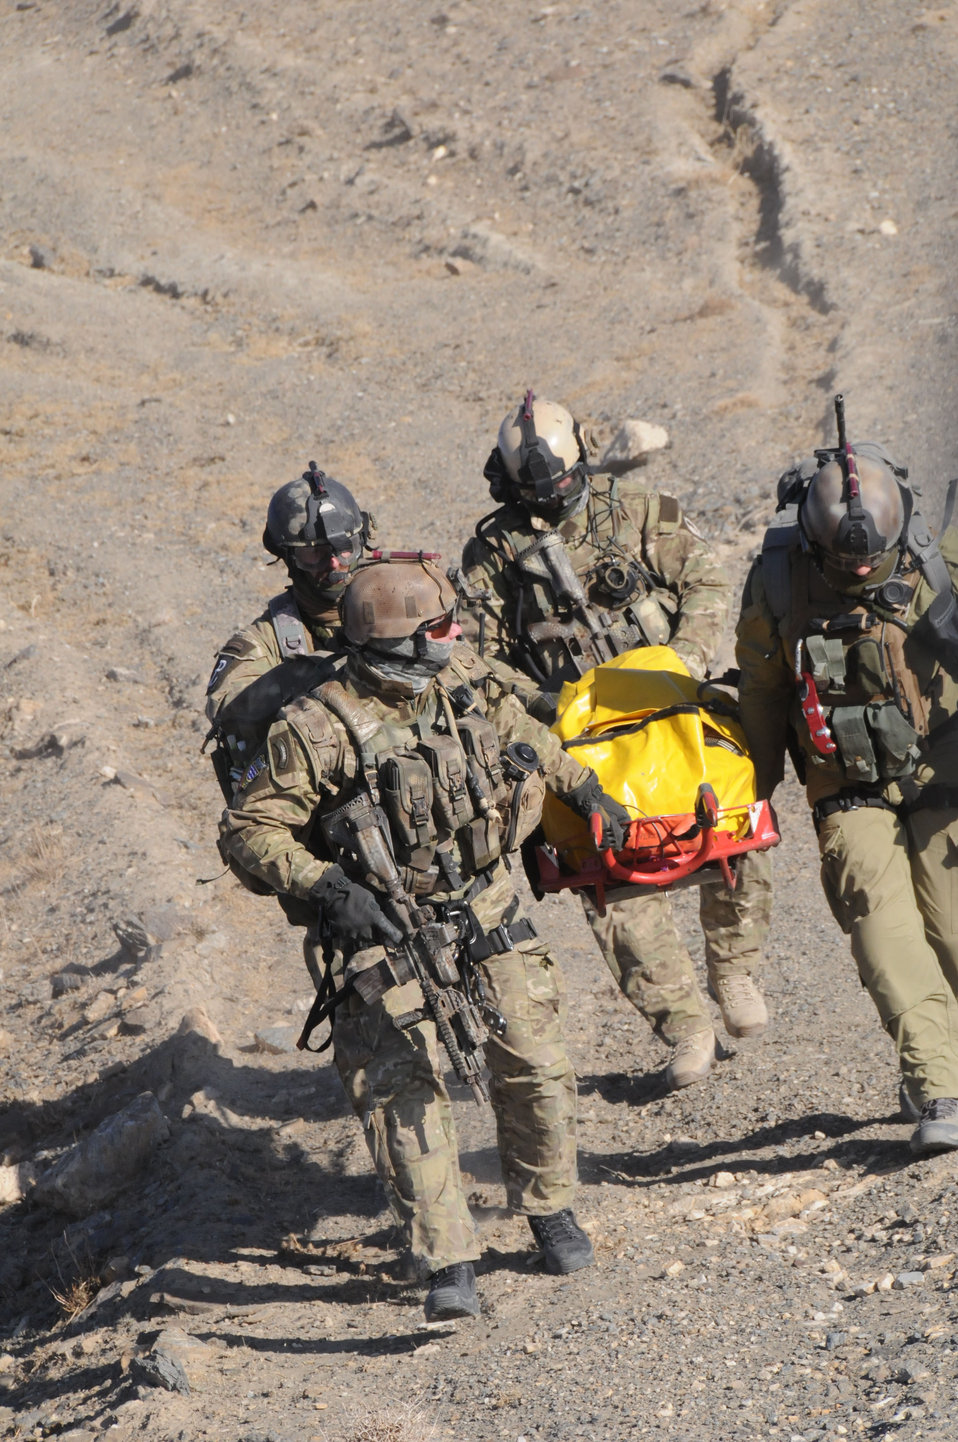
Evacuation of a casualty

Members of the Polish Special Forces carry a